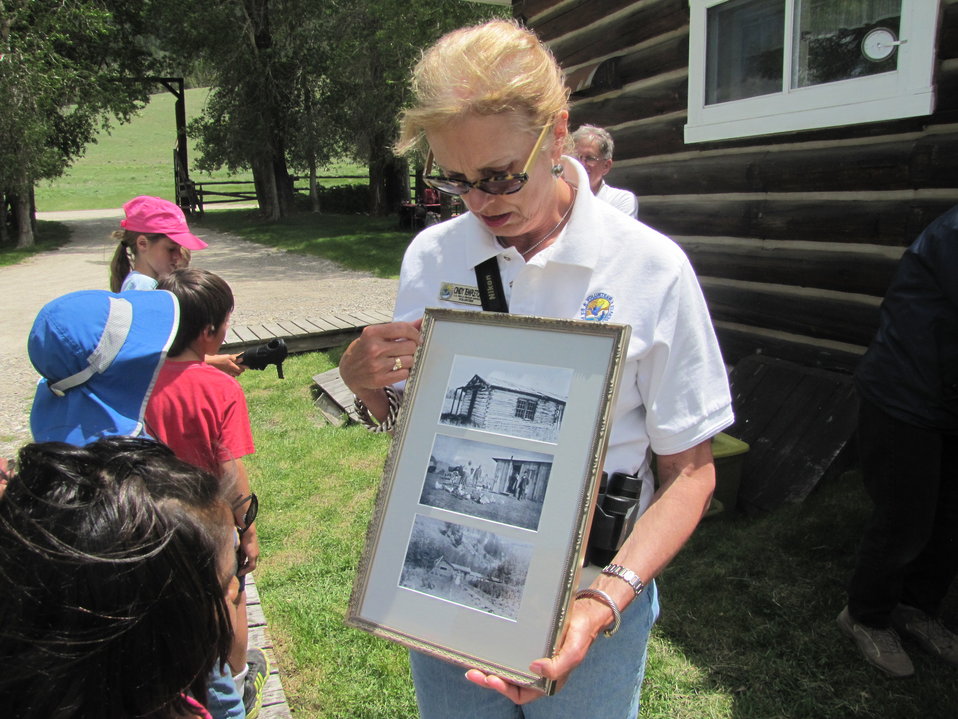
Pictures from the Past

A National Elk Refuge volunteer shows students photos of early homesteads in the Jackson Hole valley during a lesson at the historic Miller House.

Credit: USFWS / Lauren Radecsky, National Elk Refuge volunteer